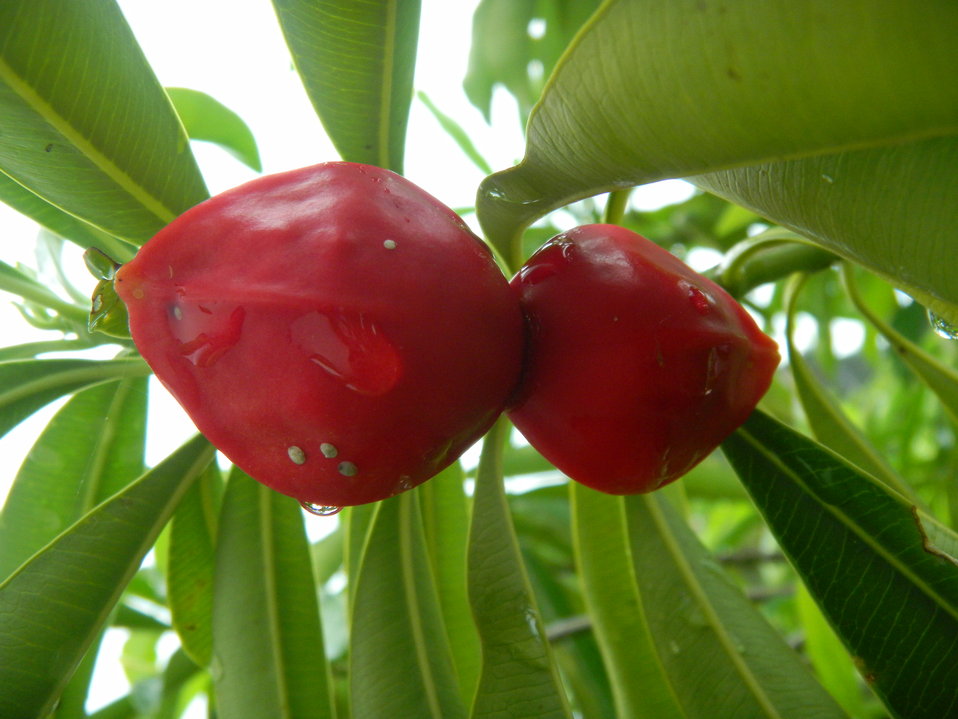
Camp Shutterbug 2011 prize winner

Guam National Wildlife Refuge, Pacific Islands
Photo: Katherine Campbell, age 14
First place, Plants and Animals
The fruit of the lipstick tree (Ochrosia mariannensis), known as Langiti on Guam, is a food source for deer and pigs. Local people reportedly use it to make dye.